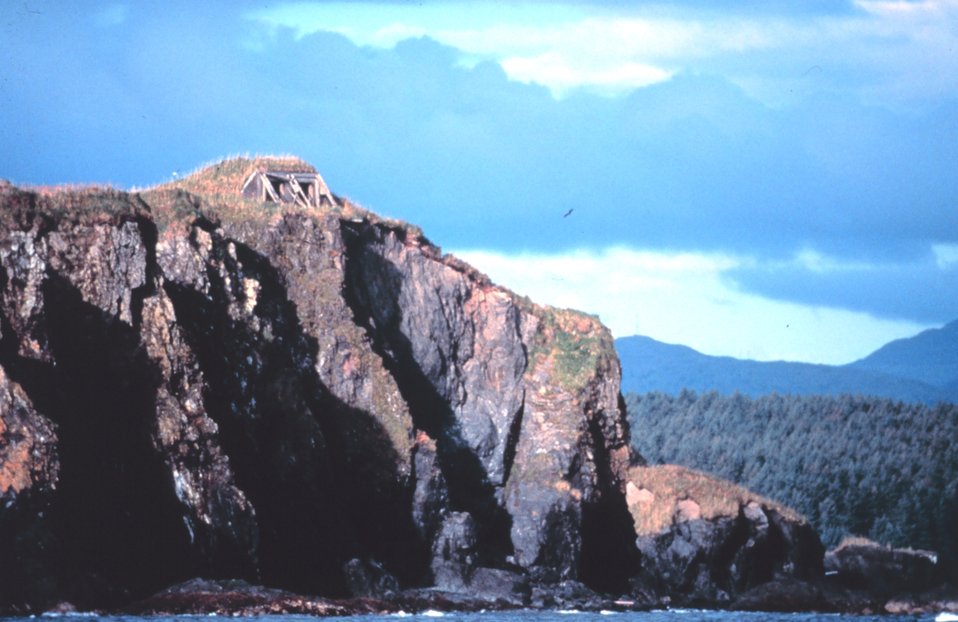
Reminder of World War II coastal defenses guarding entrance to Whittier area